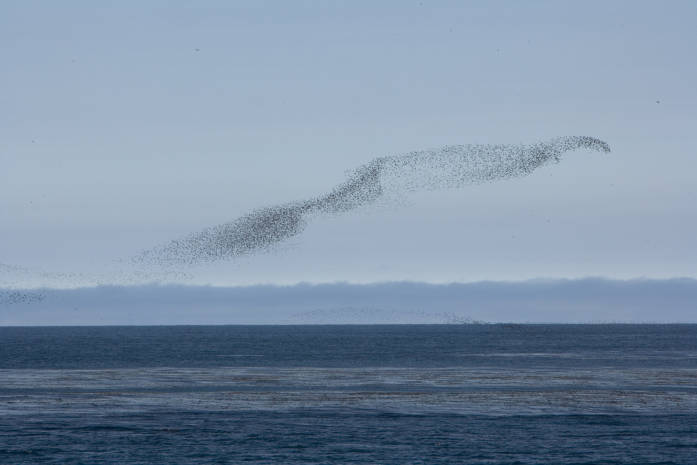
auklet cloud, Kasatochi Island

Alaska Maritime National Wildlife Refuge